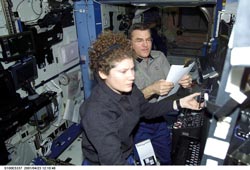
Colonel Susan Helms

Col. Susan Helms lived aboard the International Space Station as a member of the Expedition-2 crew in 2001.